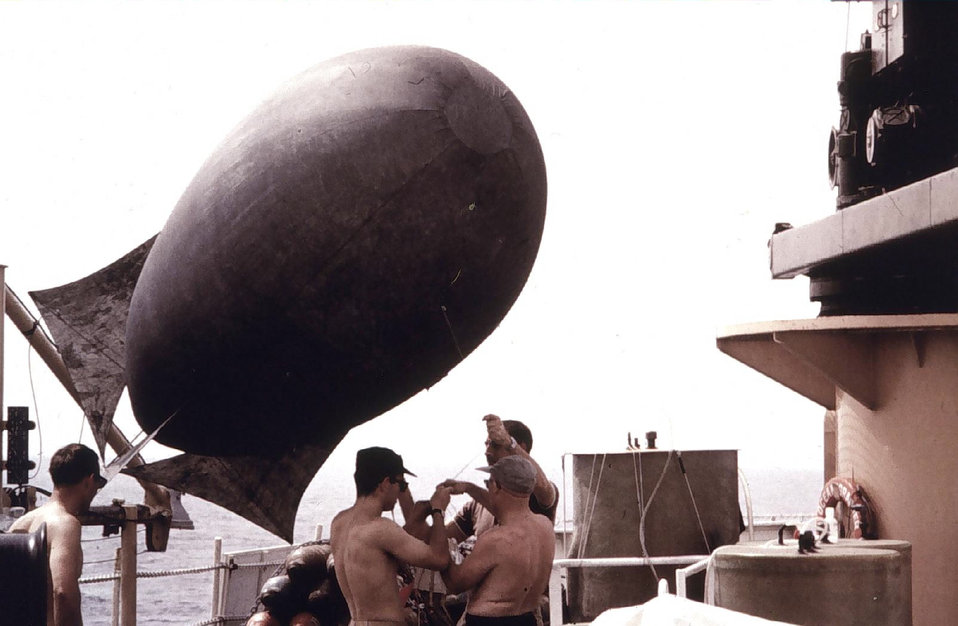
Meteorological kytoon. OCEANOGRAPHER around the world cruise